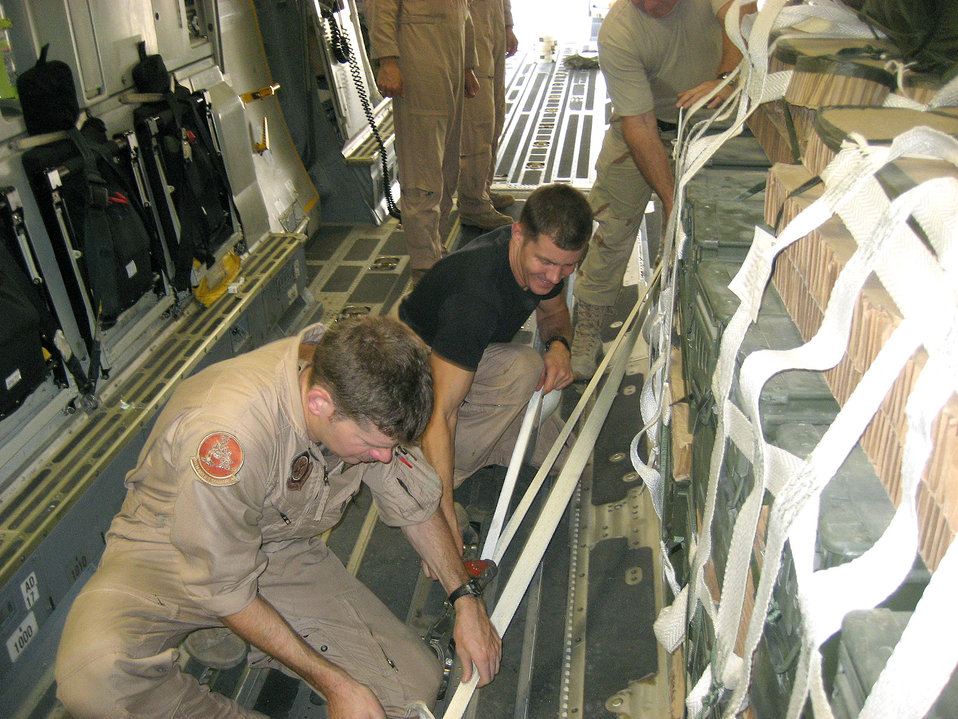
C-17 crew delivers vital supplies to Soldiers

Loadmasters Tech. Sgt. Nate Gershon (front) and Senior Airman Chad Rasmussen secure a pallet of ammunition in a C-17 Globemaster III at Manas Air Base, Kyrgyzstan, Aug. 23. The 50,000-pound load went to Soldiers in Afghanistan engaged in combat with anti-coalition forces.